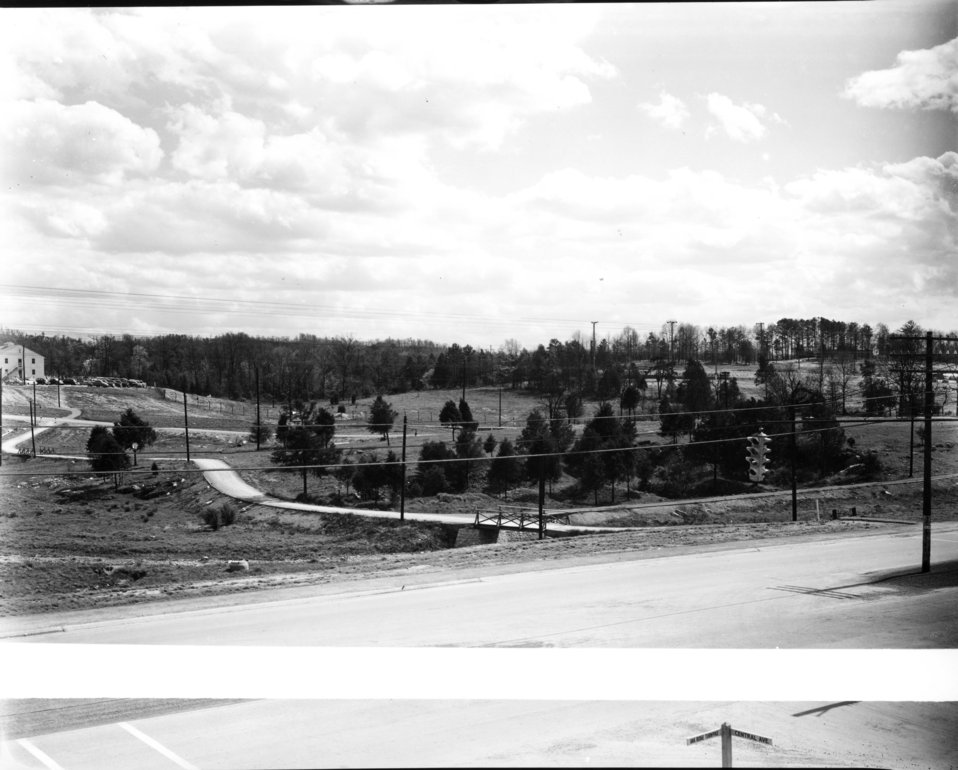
Services at Oak Ridge